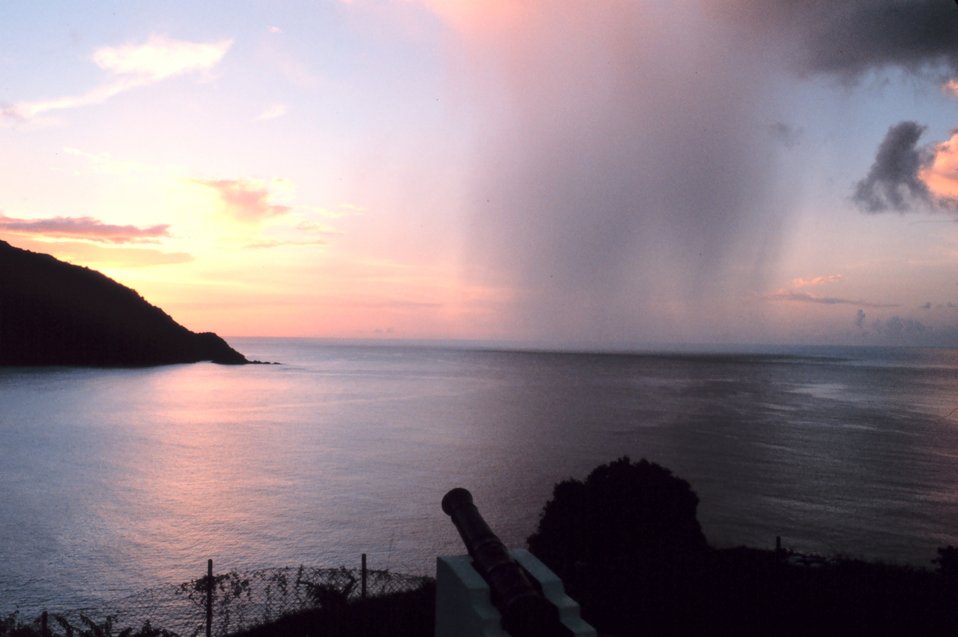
A rain shaft pierces a tropical sunset as seen from Man-of-War Bay.